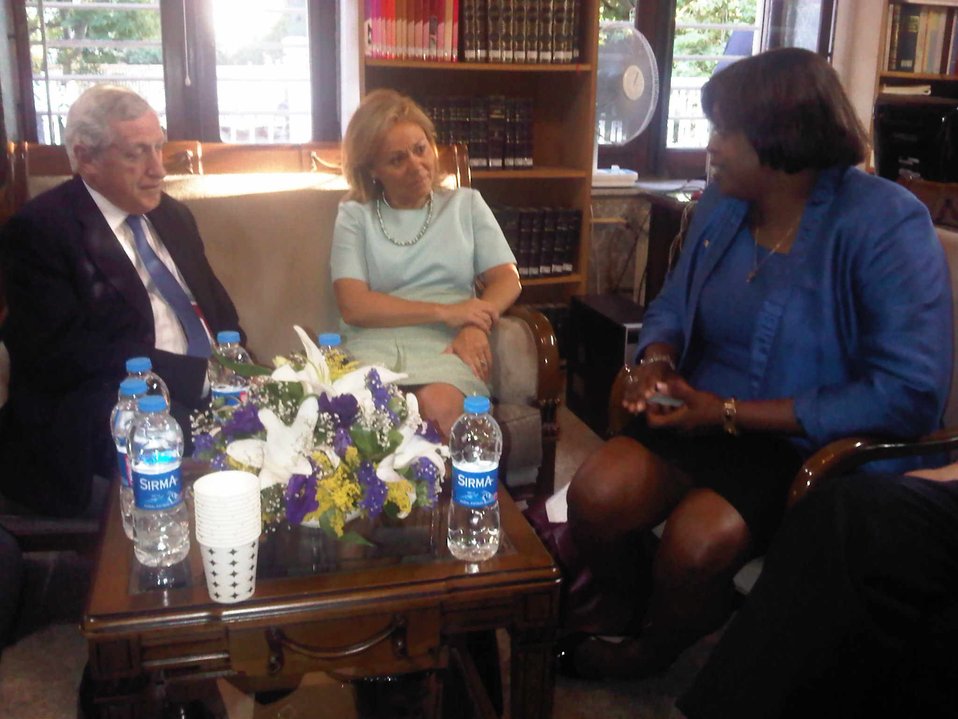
Ambassador Suzan Cooke Talks While In Istanbul, Turkey

Suzan Johnson Cook Ambassador-At-Large for International Religious Freedom talks while in Istanbul, Turkey, for the Organization of the Islamic Cooperation (OIC) on July 15, 2011.